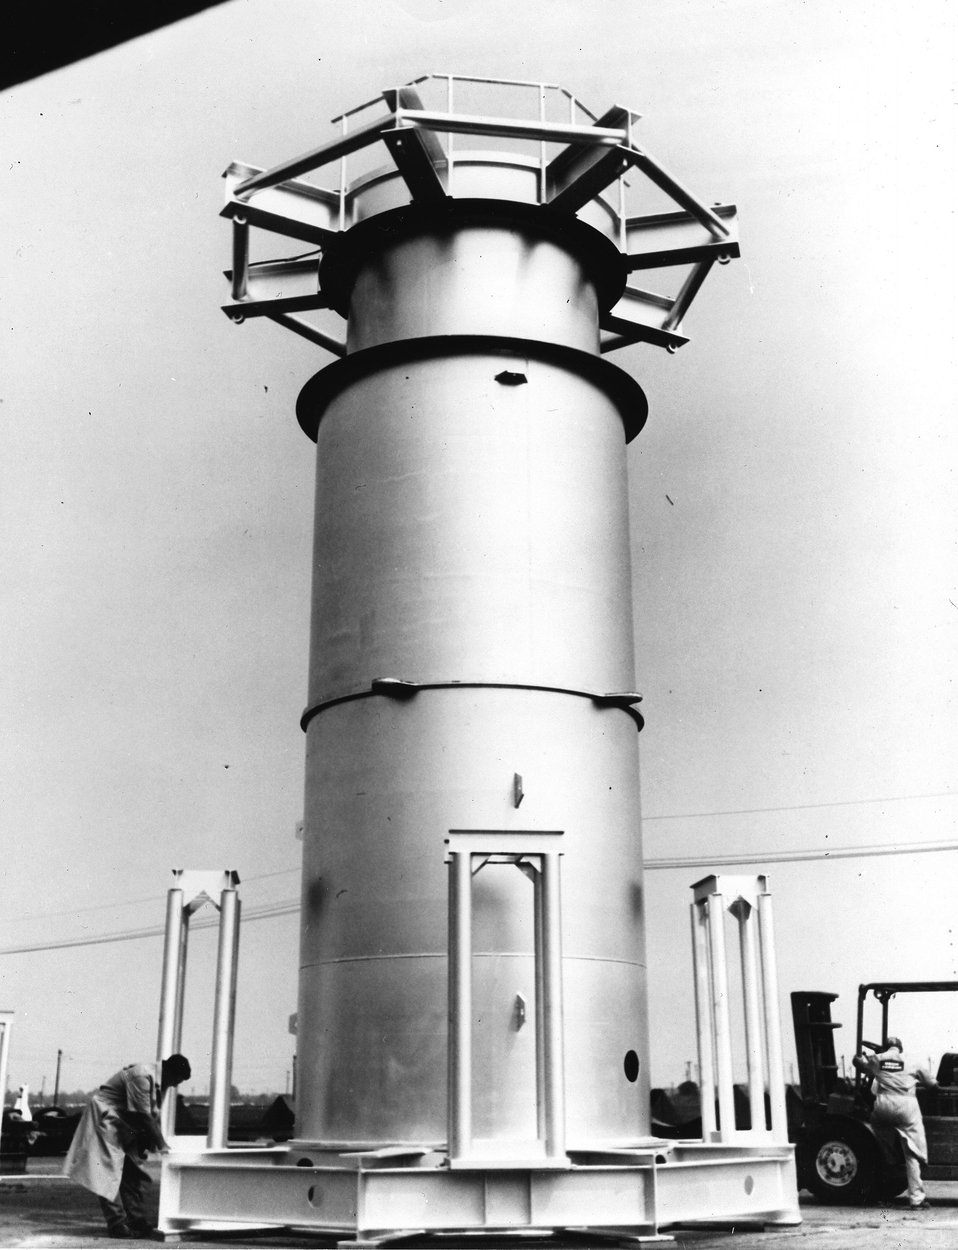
A Centaur loading fixture was fabricated by the Paducah Gaseous Diffusion Plant in Paducah, Kentucky. The 30' x 8' diameter tower will be used to proof test Titan missile structural components. c. 1972